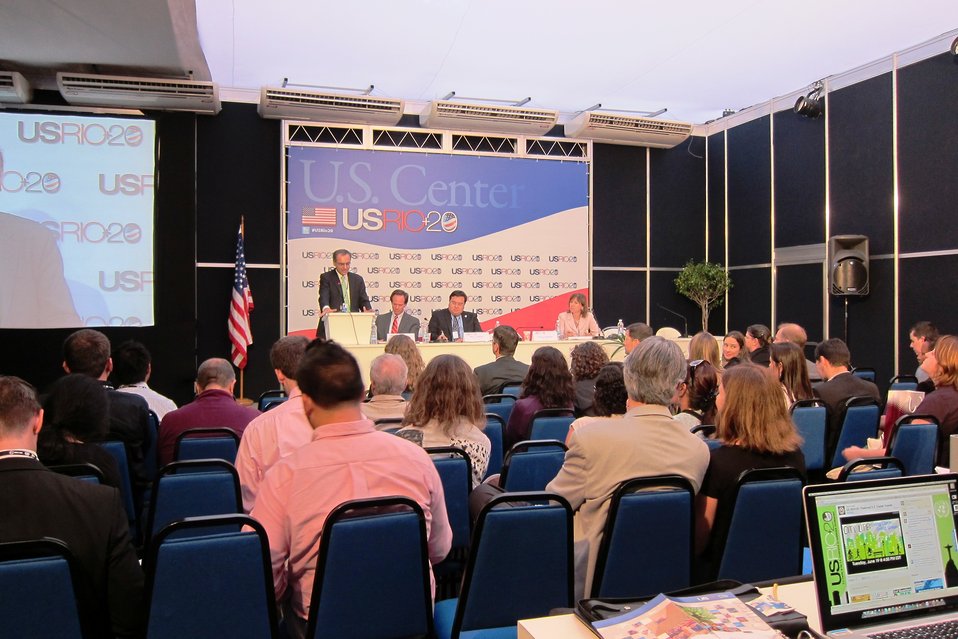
A Panel Participants Discusses Sustainability

A panel participant discusses actions the United States is taking to secure a sustainable future at the U.S. Center at the UN Conference on Sustainable Development (Rio 20) is shown in Rio de Janeiro, Brazil, on June 17, 2012.